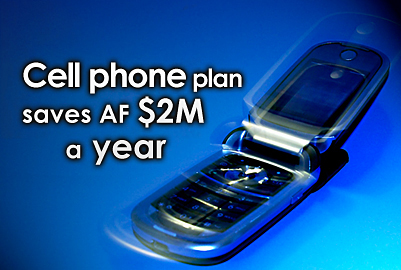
Air Force cell phone plan changes to save $2 million per year

Officials from the Office of Management and Budget have developed a plan to save the Air Force an estimated $2 million a year on government-issued cell phones.